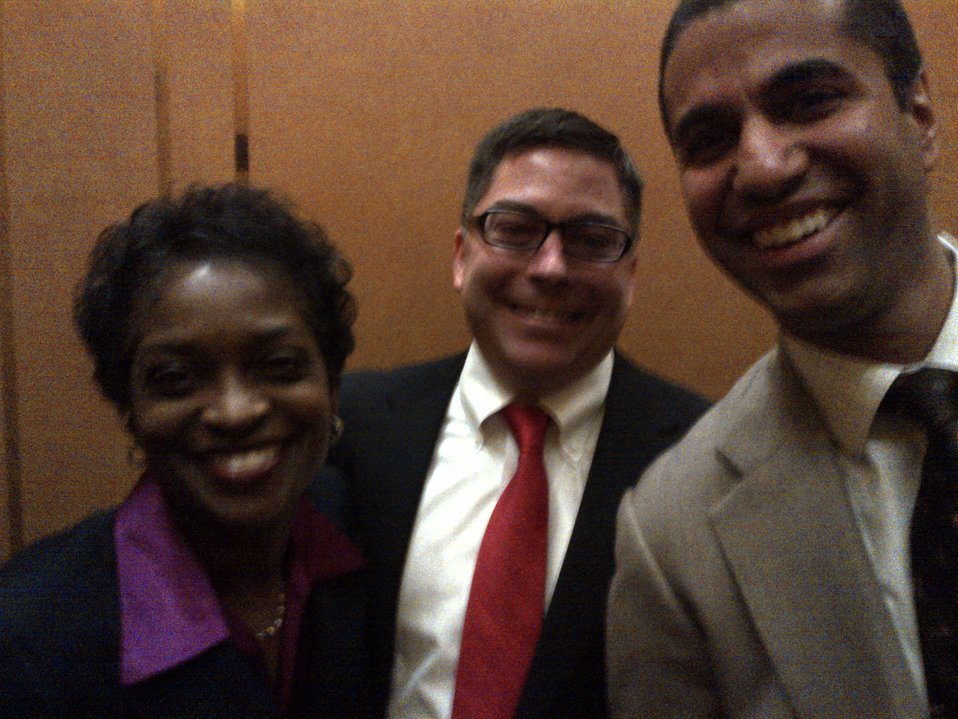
4.23.2014 Open Commission Meeting

Commissioners Clyburn, O'Rielly and Pai.